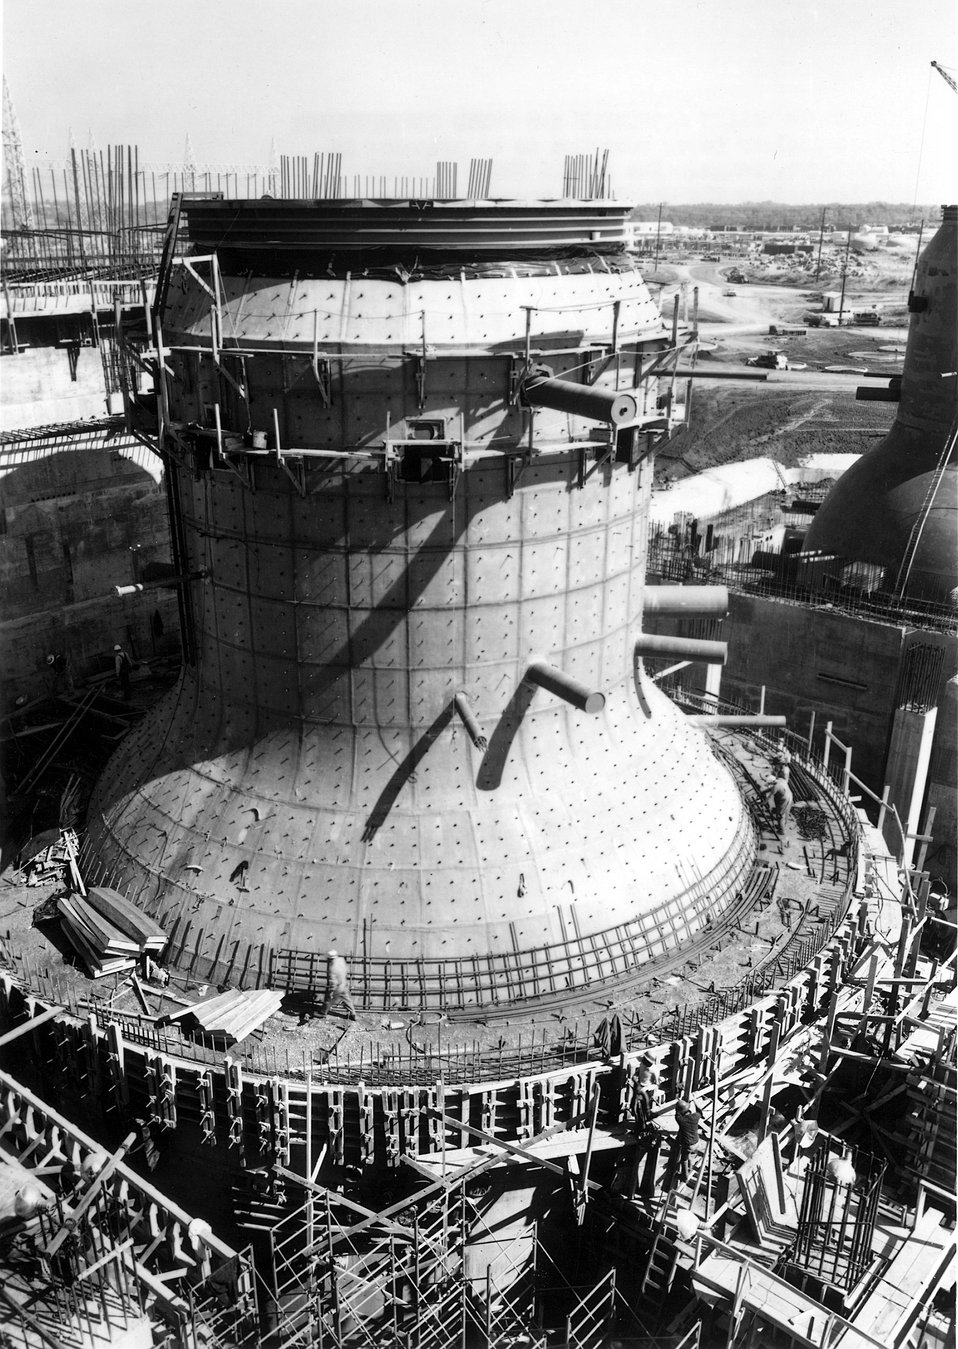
The Tennessee Valley Authority has under construction the first buclear power reactors to be proposed in the 1,000-Mwe. range. Circa 1970.